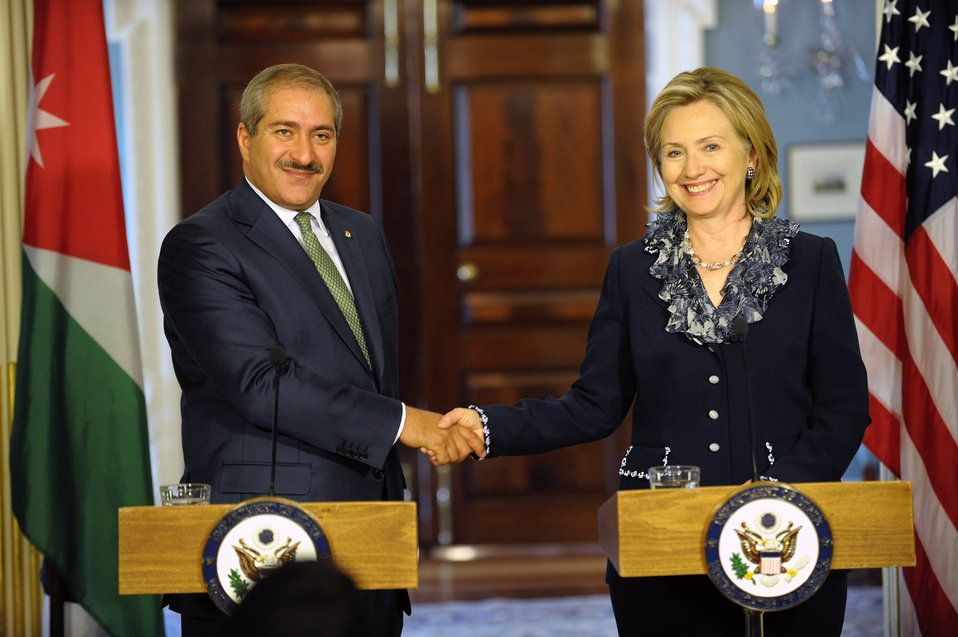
Secretary Clinton Holds a Press Avail With Jordanian Foreign Minister Judeh

U.S. Secretary of State Hillary Rodham Clinton holds a press availability after a bilateral meeting with Jordanian Foreign Minister Nasser Judeh in the Treaty Room at the U.S. Department of State in Washington, D.C., on July 8, 2010.